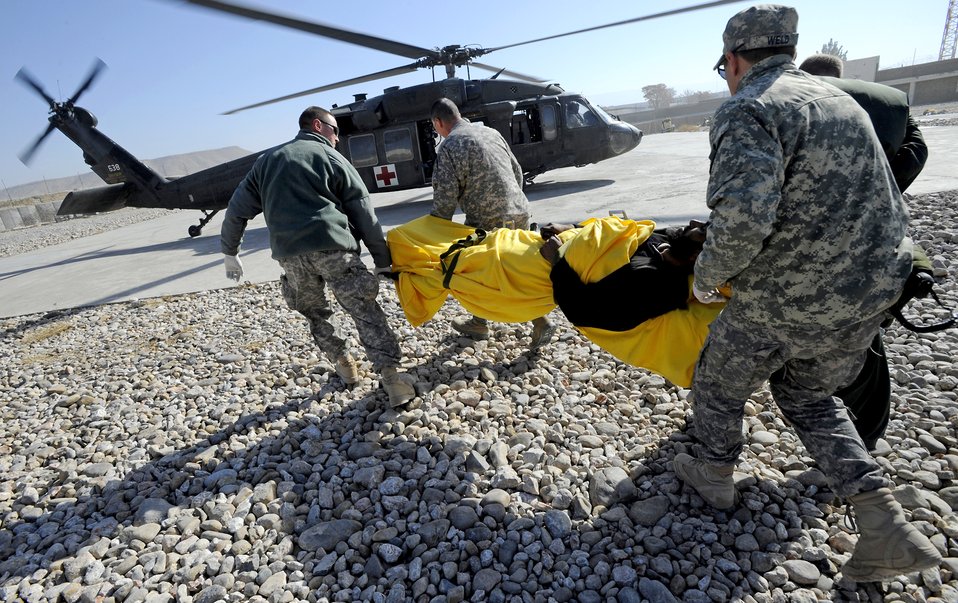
Getting care fast

Airmen and Soldiers from the Provincial Reconstruction Team Zabul load a patient onto a medevac helicopter after a civilian bus rolled over, leaving seven dead and more than 30 injured just outside Qalat City, Afghanistan, Nov. 30, 2010. Medical personnel from the PRT were on the scene at a local hospital to assess patients and provide medical care.